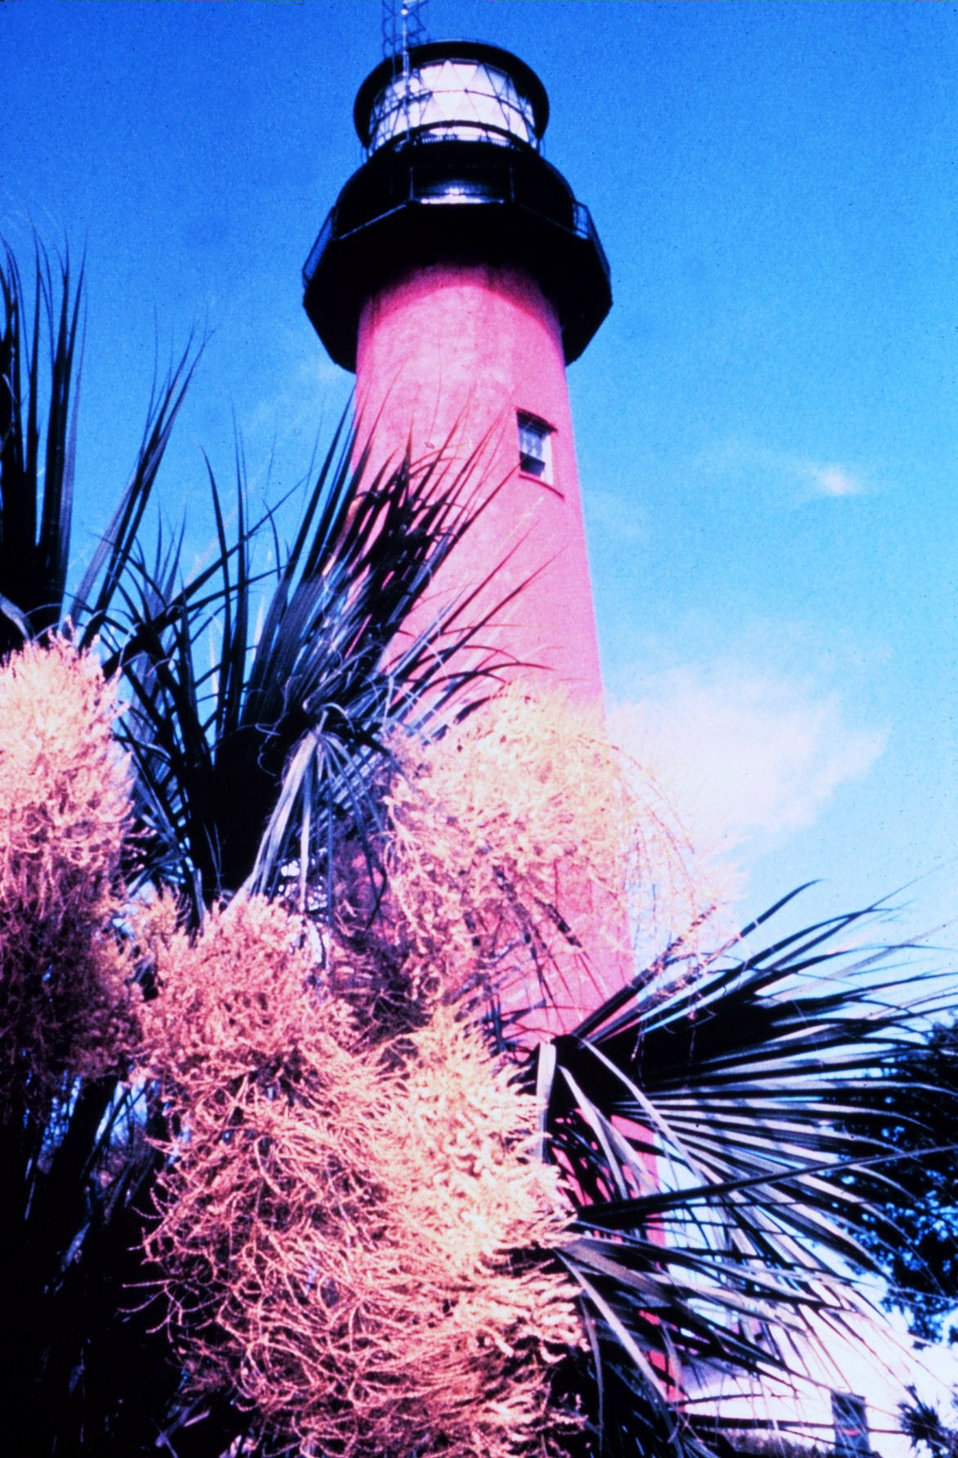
Lighthouse and palmetto